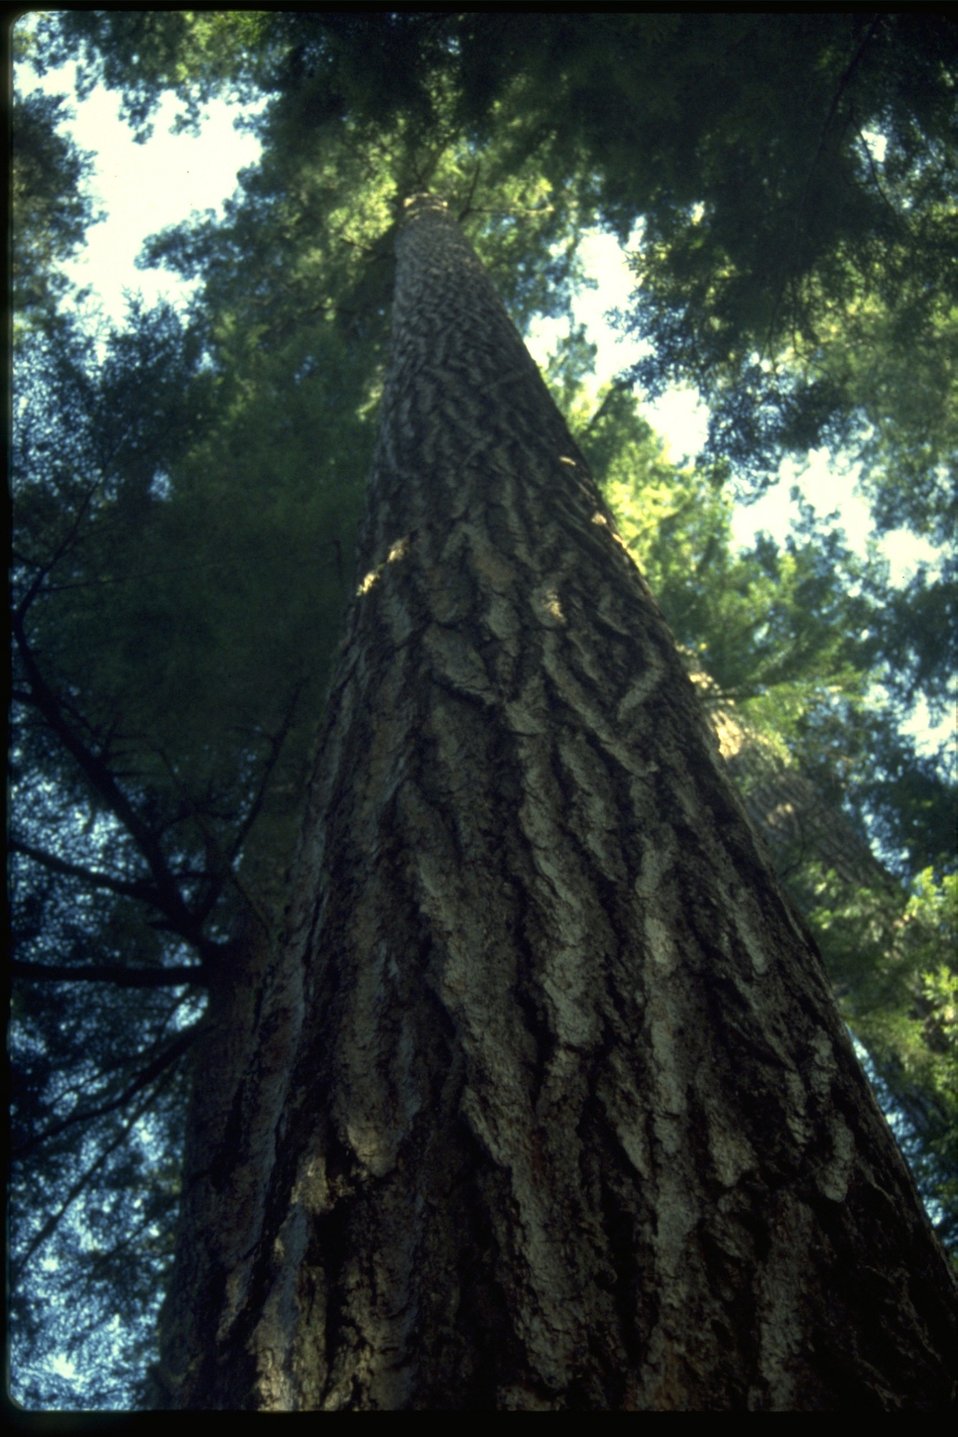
View up into a tree in the Valley of the Giants.